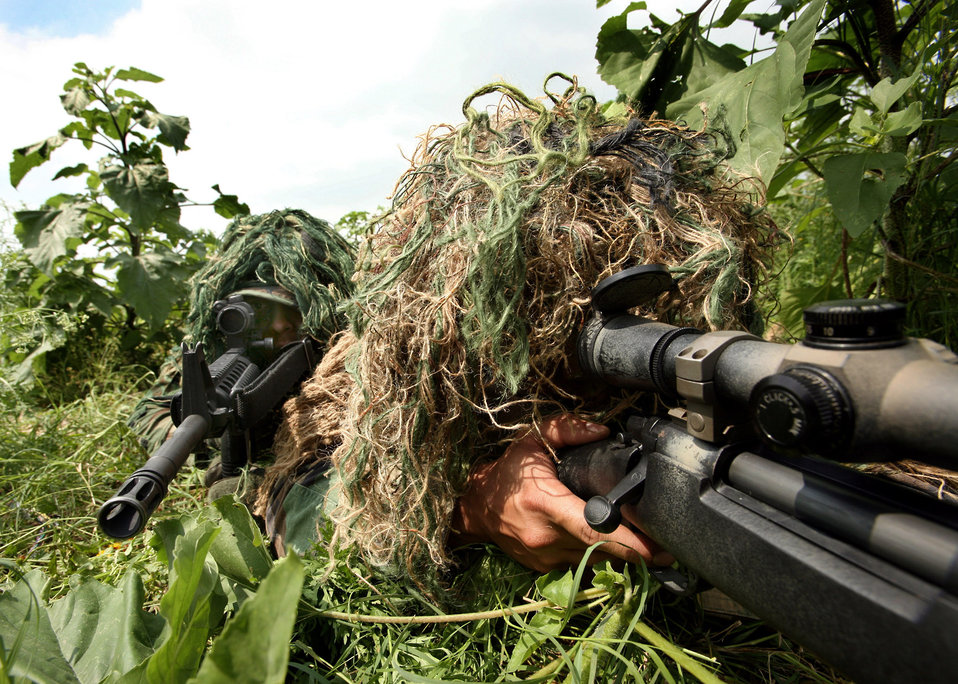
Blending in is good

Senior Airman Andrew Caro (left) and Staff Sgt. Dustin Maglinti take aim at a target building during a training exercise May 4 at Lackland Air Force Base, Texas. They are close-precision-engagement-team members and blend in to their surroundings, thanks to their